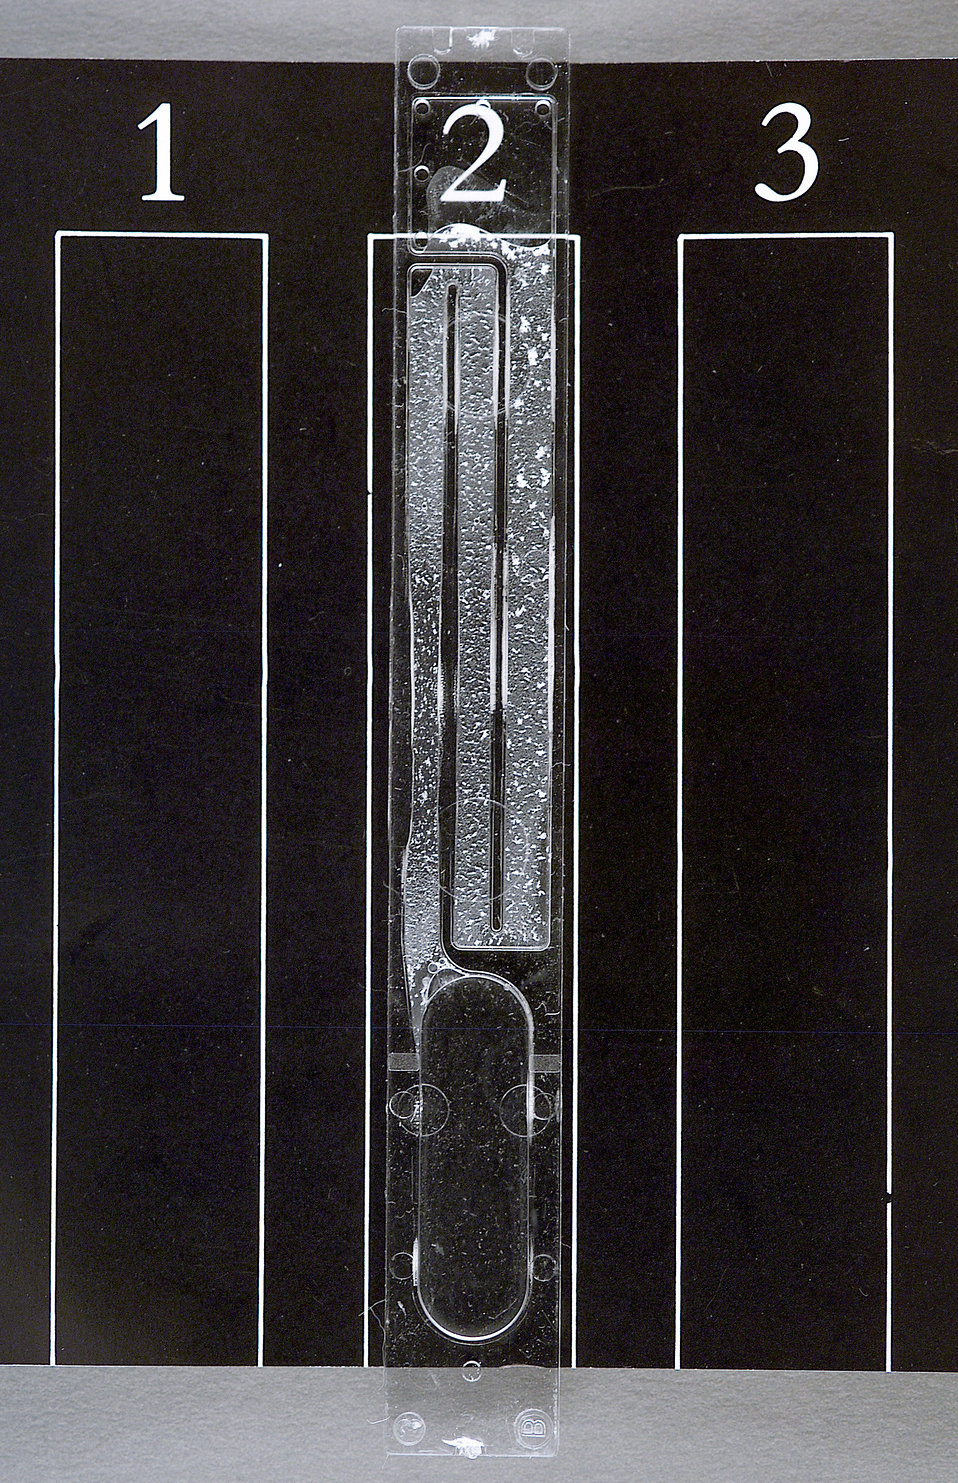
This is an example of a 'positive' CAPILLUS� HIV-1/HIV-2 Rapid Test result revealing latex aggregation, or 'clumping'.